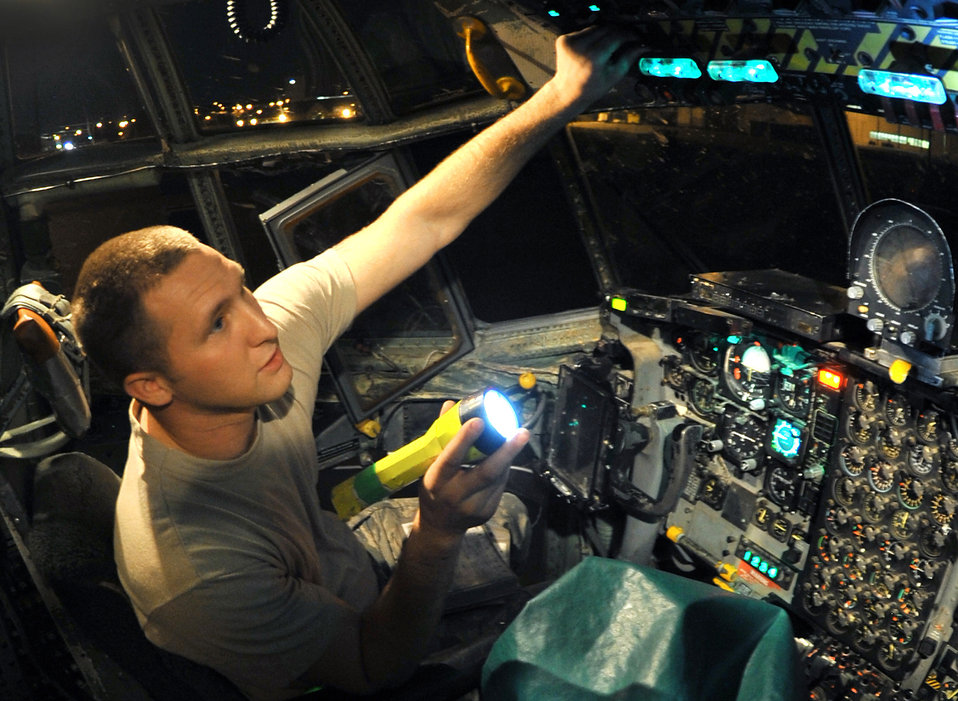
Surge week

Airman 1st Class Steven Nesselrotte checks the lights inside a C-130 Hercules April 14, 2011, at Little Rock Air Force Base, Ark. Airman Nesselrotte is a crew chief assigned to the 19th Aircraft Maintenance Squadron.